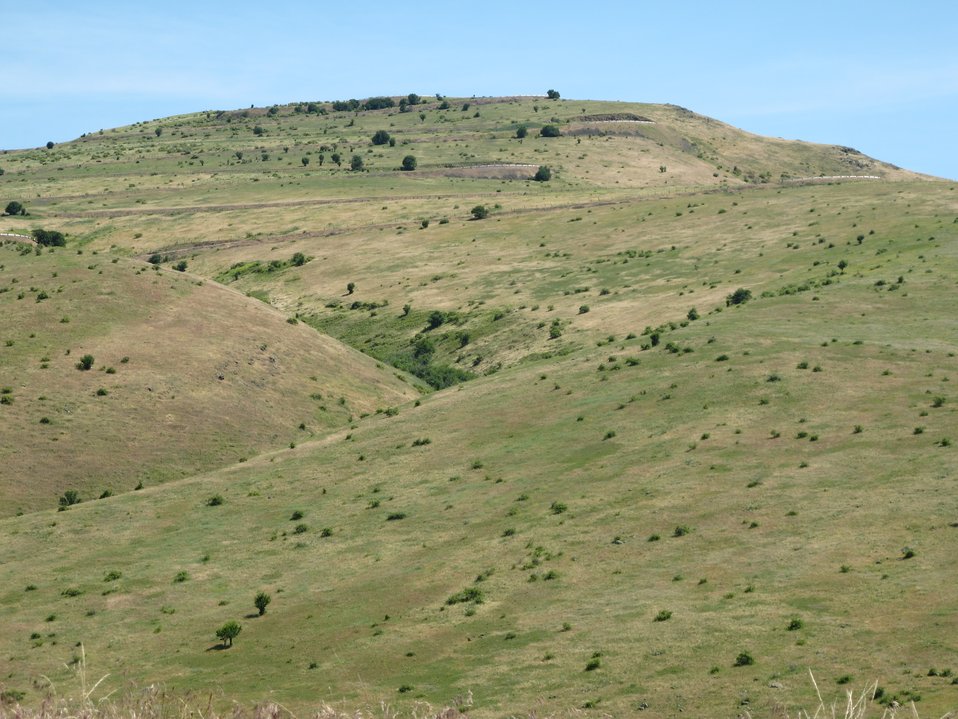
A remarkable number of switchbacks grace U.S. Highway 95 on the descent down into White Bird Canyon. White guardrails are visible on some of the switchbacks.